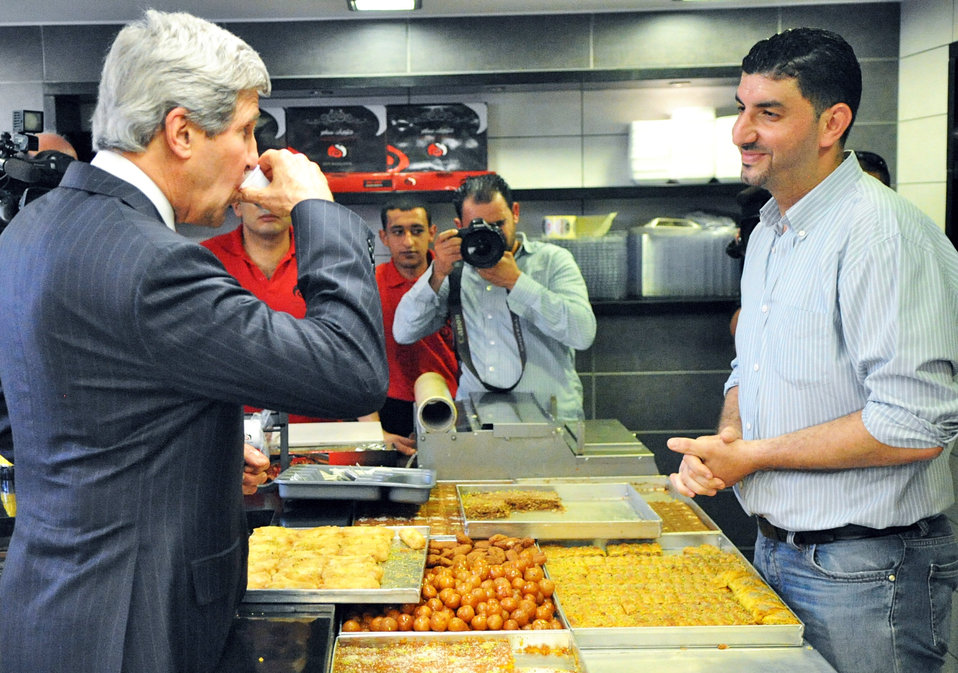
Secretary Kerry Sips a Coffee in Ramallah

U.S. Secretary of State John Kerry sips a coffee after enjoying some sweets at a shop in Ramallah on May 23, 2013.